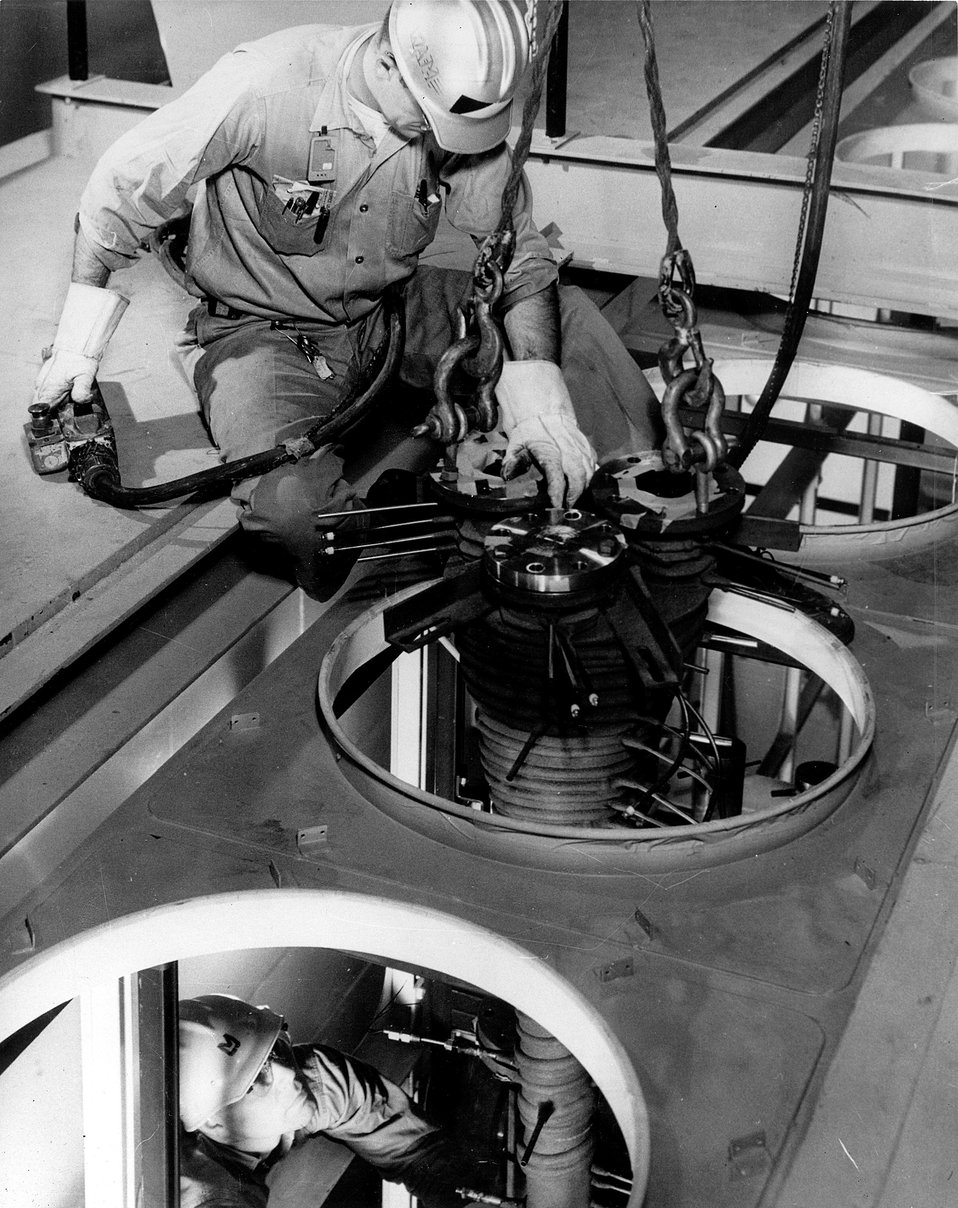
Equipment being installed in fluoride volatility semiworks.
c.1964